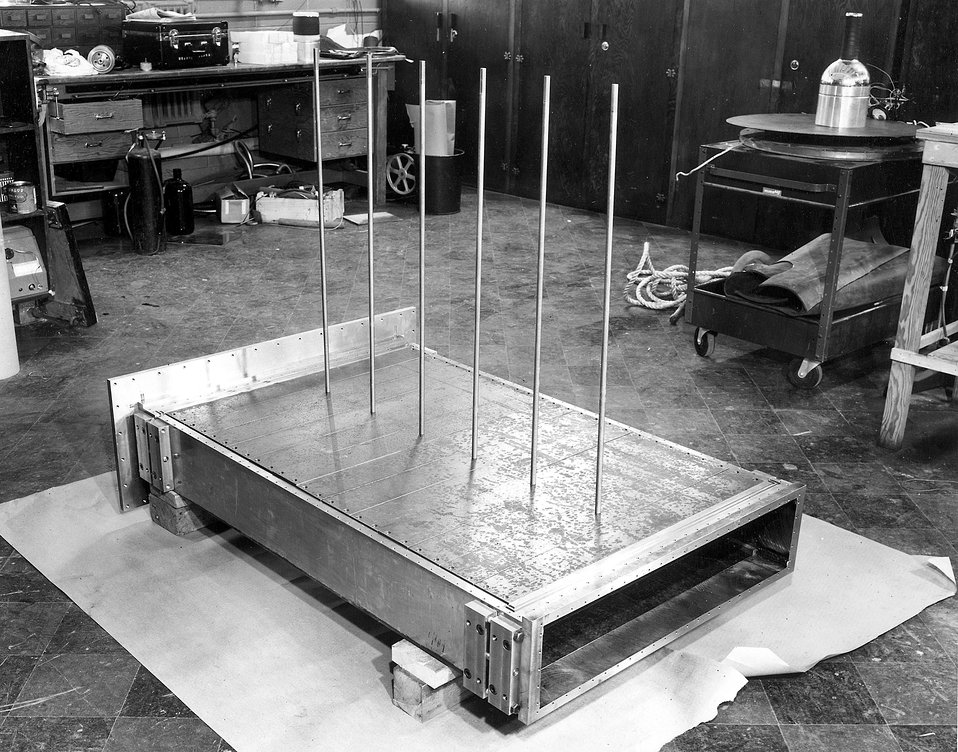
A section of a developmental model of vacuum chamber using 'sky hooks'. This technique was abandoned. c. 1950